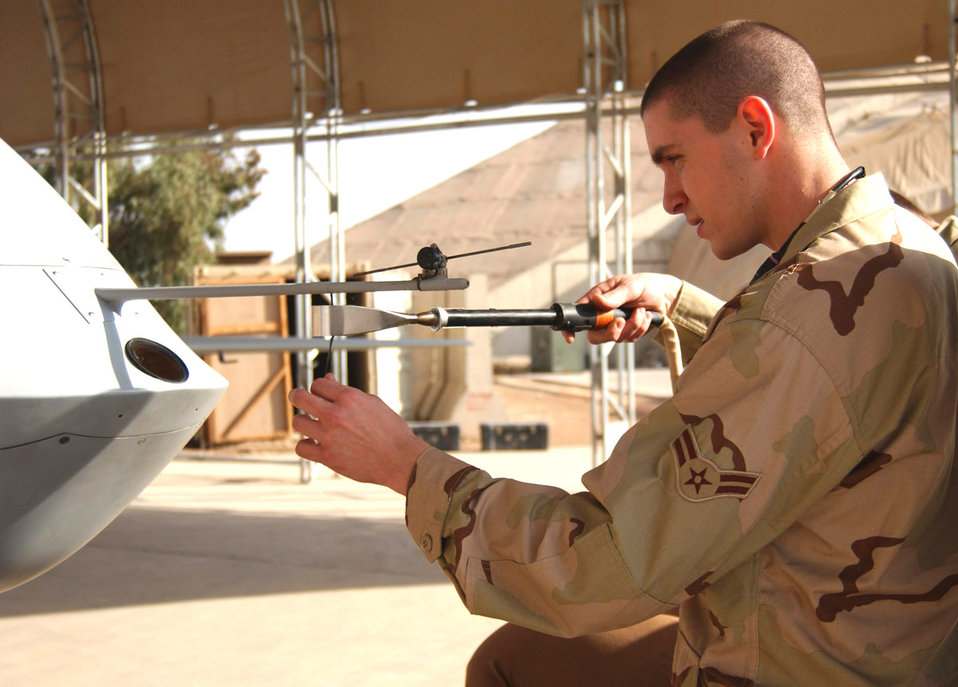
Prowling Predators

BALAD AIR BASE, Iraq (AFPN) -- Airman 1st Class Frank Miklos uses a heating tool to secure a yaw string on an MQ-1 Predator. The pilot uses the yaw string to determine wind direction. The Airman is with the 46th Aircraft Maintenance Unit and deployed from Creech Air Force Base, Nev.